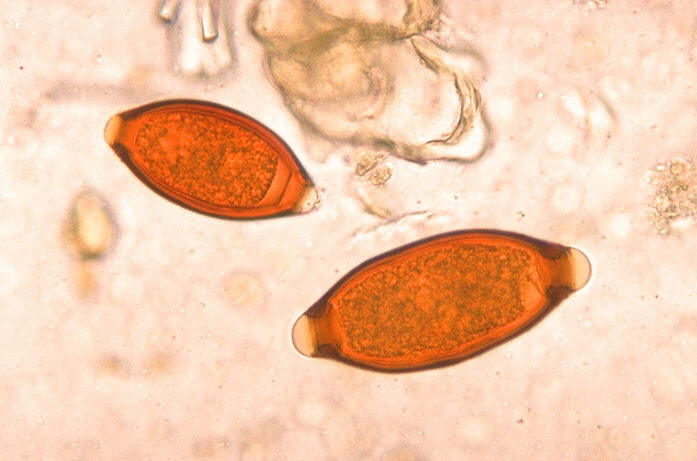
Eggs of Trichuris trichiura and Trichuris vulpis.